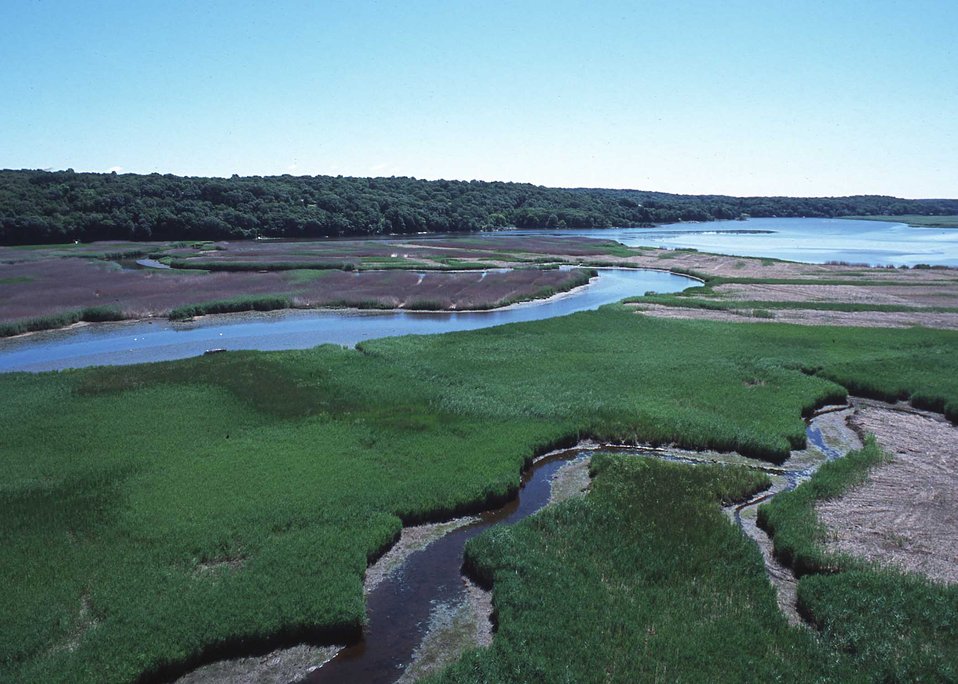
Connecticut River tideland habitat undergoing invasive plant control (light colored areas) and native plant community restoration.